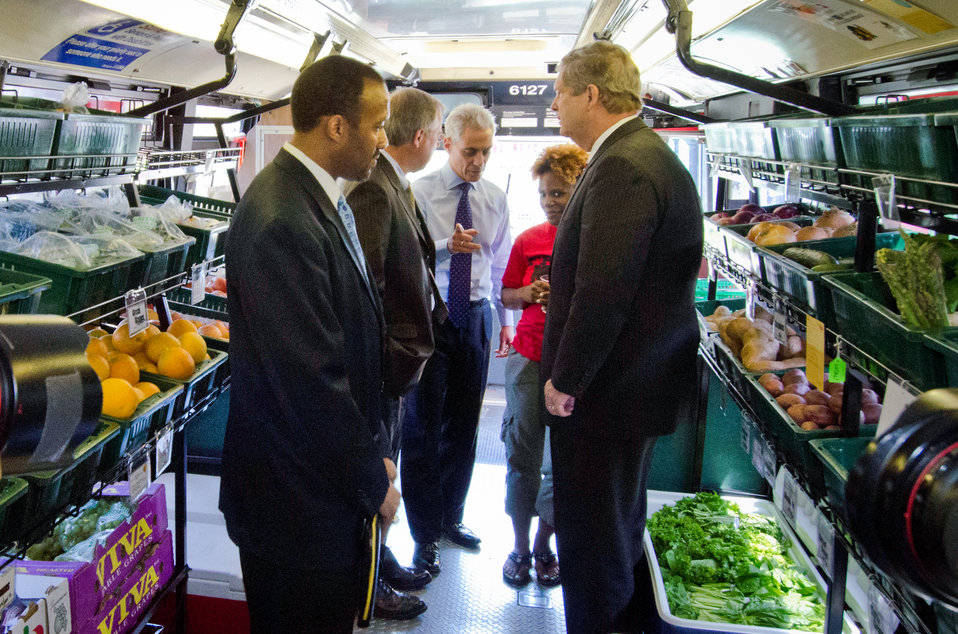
From left: Steve Casey, Fresh Moves, Robert Flider, Illinois Department of Agriculture, Chicago Mayor Rahm Emanuel, and Agriculture Secretary Tom Vilsack toured a Fresh Moves Mobile Market Bus, a renovated Chicago Transit Authority Bus in Chicago, Illinois on Friday June 8, 2012. The bus delivers fresh, affordable fruits and vegetables to Austin and North Lawndale, two neighborhoods with limited access to fresh produce. Secretary Vilsack highlighted Obama administration efforts to increase access to healthy food in communities. Secretary Vilsack also commended Mayor Emanuel’s commitment to healthy food access and announced United States Department of Agriculture support for the expansion of mobile markets in Chicago, as well as a research project to assess the impact of mobile markets as a strategy to increase healthy food access in rural and urban communities.